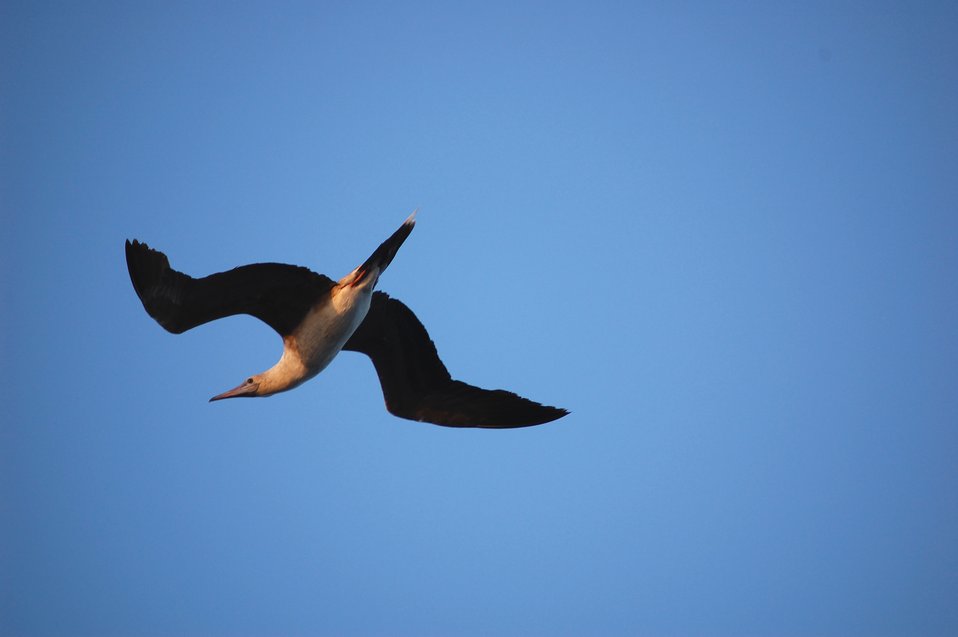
Red-footed booby in flight.